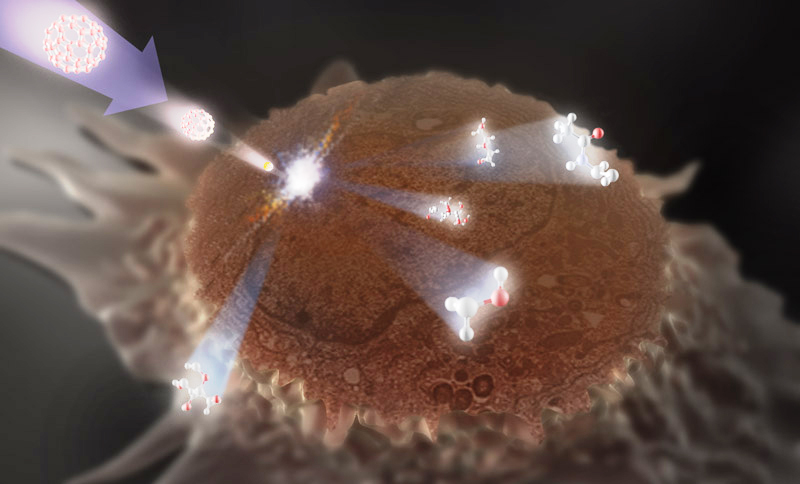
HeLa Cell

Artist's illustration showing a HeLa cell with its top already 'milled' off being probed by a secondary ion mass spectrometry (SIMS) beam. Molecules from three sections of the cell-the membrane, the cytoplasm and the nucleus-are seen ejecting from the surface in response. The spectra from these molecules are used to map the cell sections from which they originate.